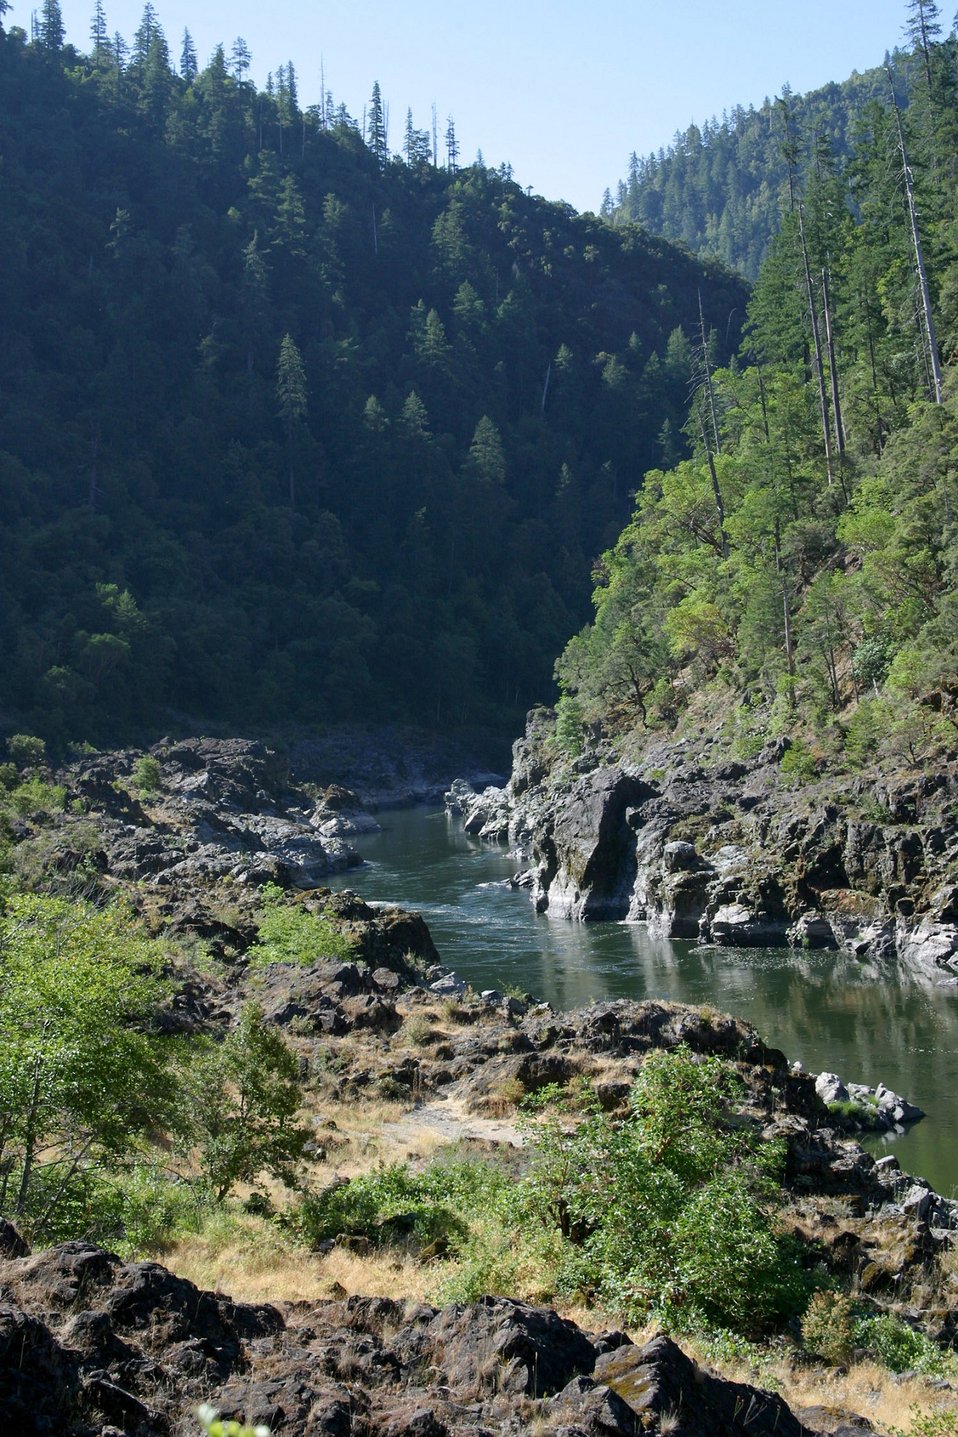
Looking up river from Blossom Rapids.